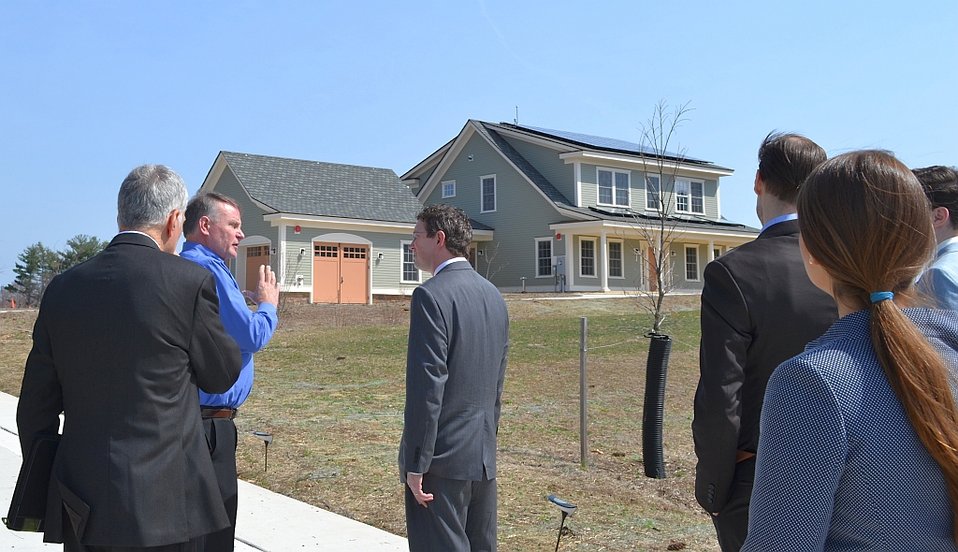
Representative Massie Tour #3

Mr. Phil Singerman [far left] NIST Associate Director for Innovation & Industry Services, and Dr. Hunter Fanney [left] of NIST’s Engineering Laboratory welcome U.S. Representative Thomas Massie (R. KY) [center] and staff of the House of Representatives Committee on Science, Space & Transportation to a tour of the Net-Zero Energy Residential Test Facility.